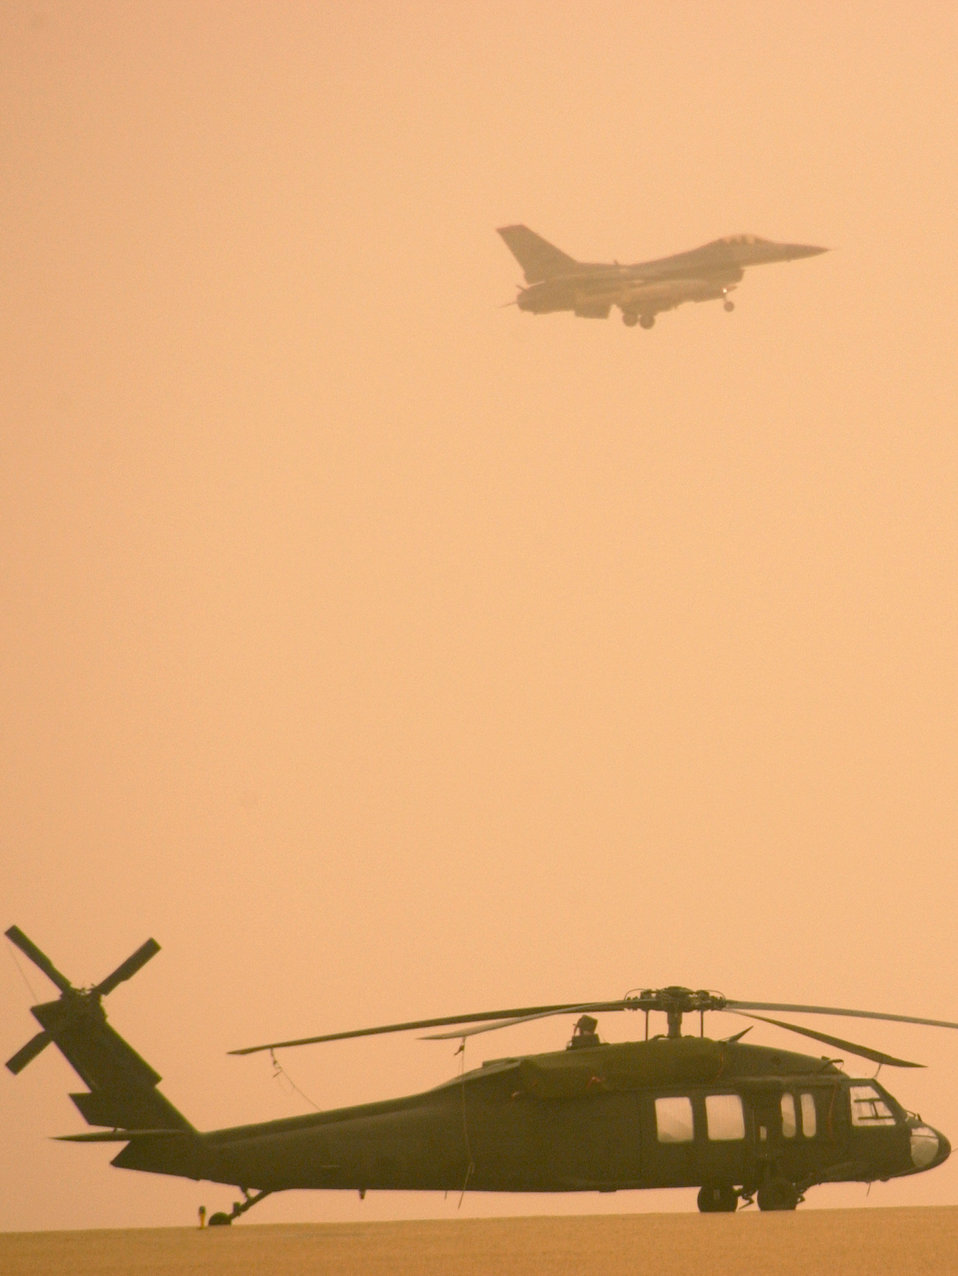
Sand storm

OPERATION IRAQI FREEDOM -- An Army Blackhawk helicopter sits quietly on the ground as an F-16 Fighting Falcon lands during a severe sand storm at a forward-deployed location supporting Operation Iraqi Freedom.